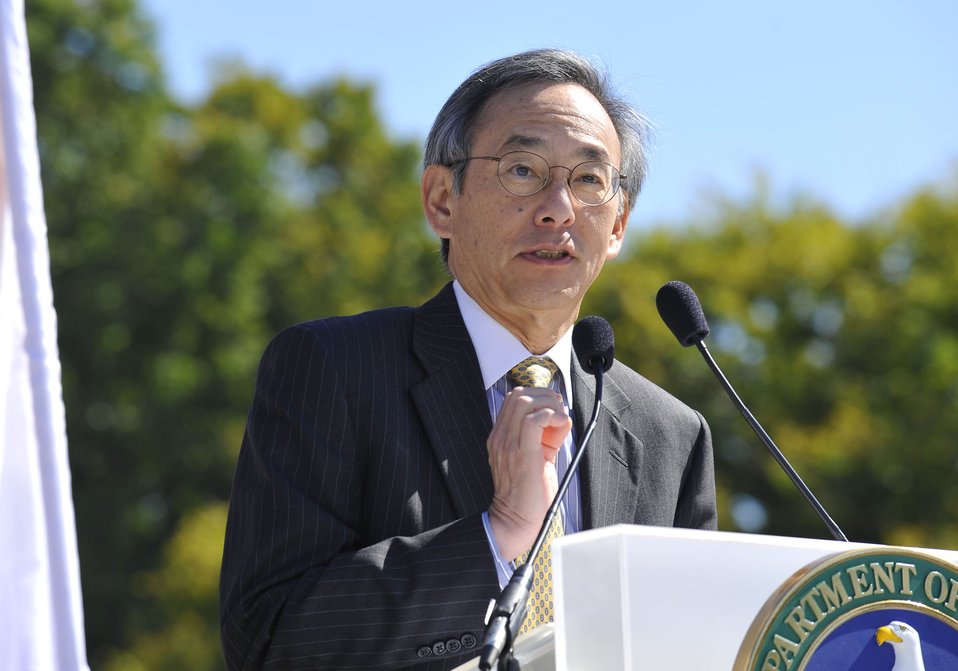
Solar Decathlon 2009 on the National Mall, with Sec. Chu

Solar Decathlon 09